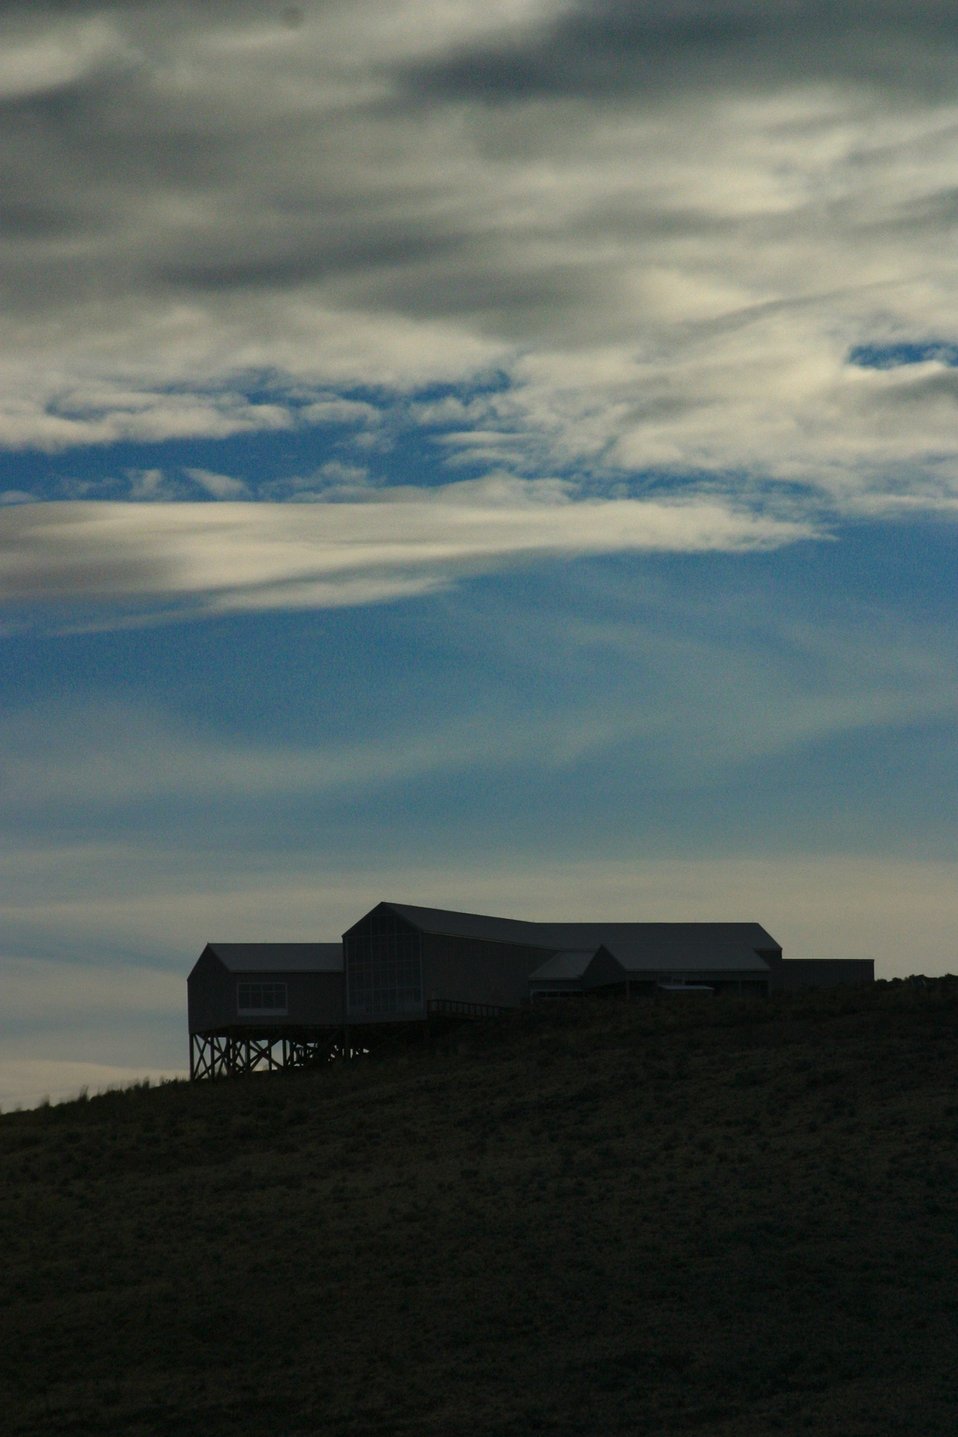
National Historic Oregon Trail Interpretive Center.